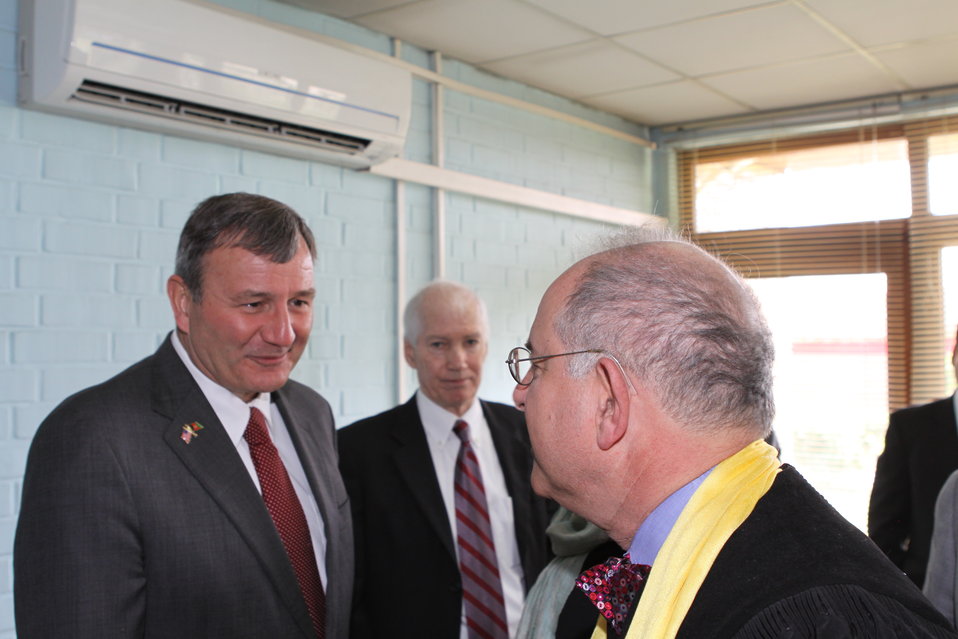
100526 AUAF Graduation 036